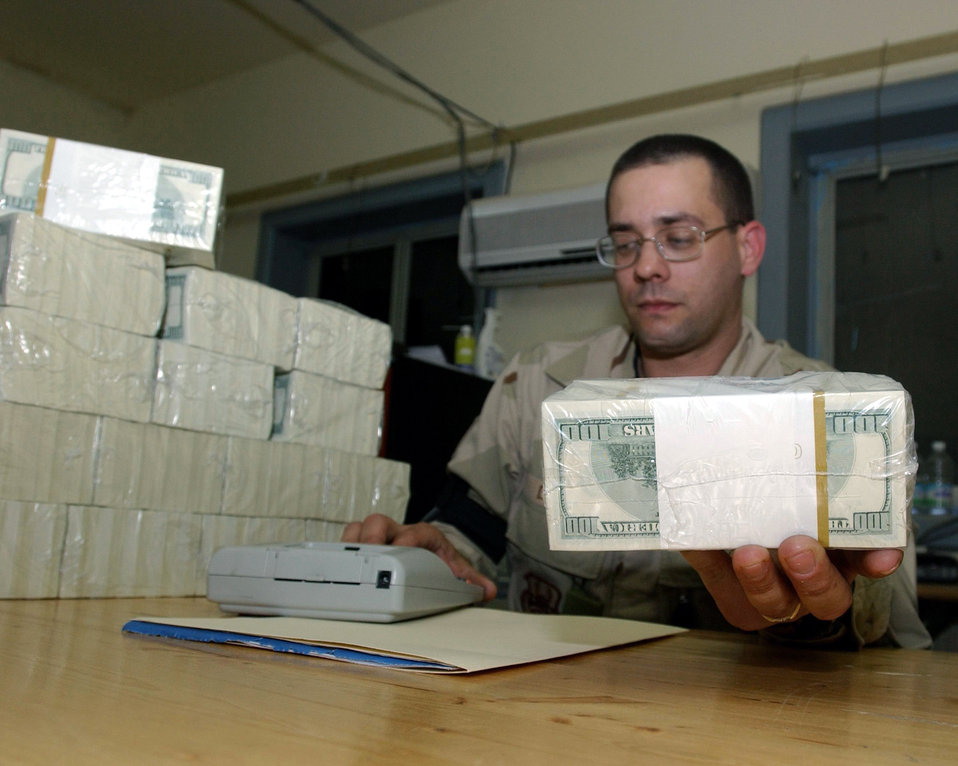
Show me the money

SOUTHWEST ASIA -- Tech. Sgt. Mark Deahl inventories $1.6 million before the cash is placed in a vault. Sergeant Deahl is a pay agent at a forward-deployed location. He is from the 14th Flying Training Wing's comptroller flight at Columbus Air Force Base, Miss.